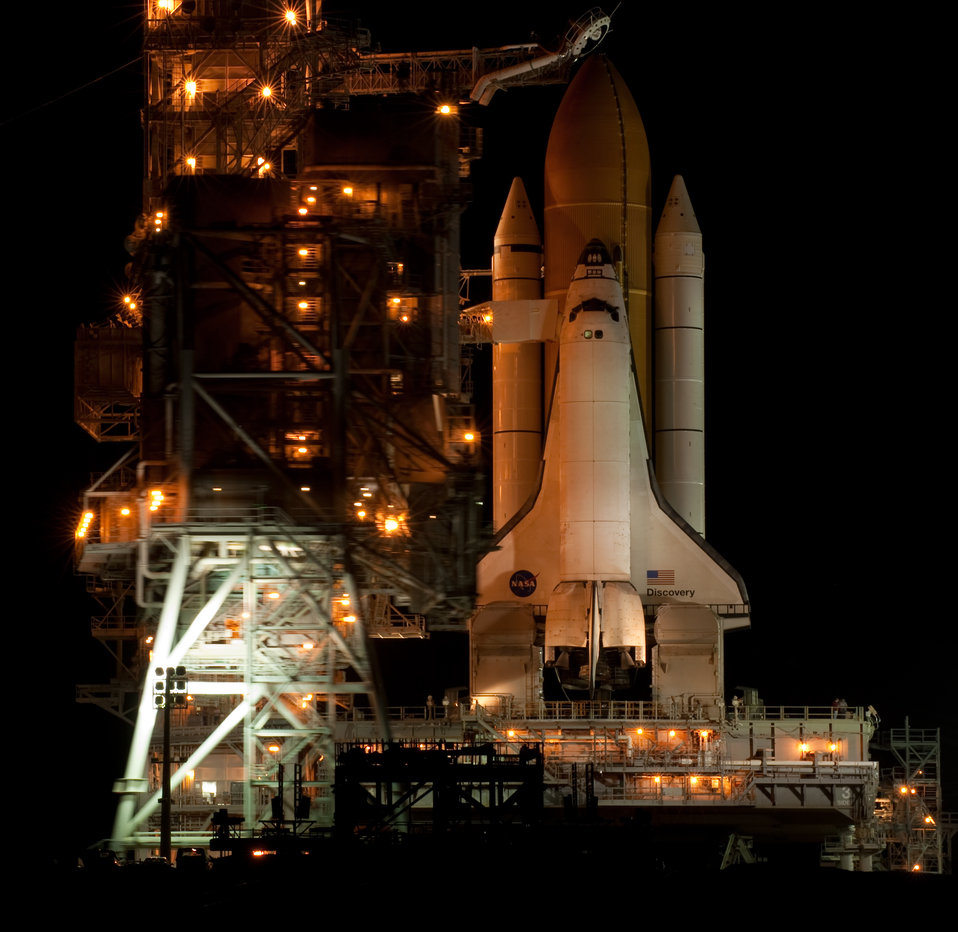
Orbiter

The massive rotating service structure swings away from the space shuttle revealing the orbiter Discovery on Nov 3, 2010 at the Kennedy Space Complex, Fla. Between now and launch time, numerous checks will be accomplished before the mission will be ready to go. But, because of a weather delay the launch is expected to be Friday. Late that morning the space travelers will head to the launch complex to be strapped in and prepare to blast-off into space. STS-133 will be commanded by retired (USAF) Colonel Steve Lindsey. This final flight of Discovery will be piloted by active duty (USAF) Col. Eric Boe. The lead mission specialist is (USAF) Col. Alvin Drew.